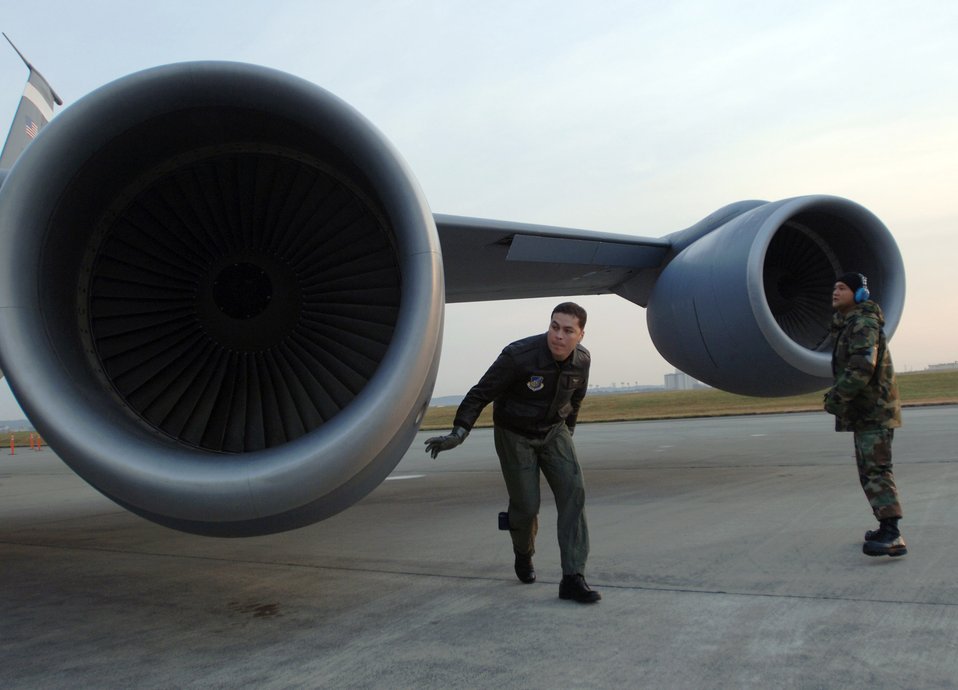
Keeping Stratotankers flying

YOKOTA AIR BASE, Japan (AFPN) -- KC-135 Stratotanker pilot Capt. Brian Burr (left), preflights his aircraft with crew chief Senior Airman James Taimanglo before an exercise Cope North 05 morning sortie. Cope North is a bilateral exercise to enhance U.S. and Japanese air operations. It gives pilots from both countries opportunities to conduct training in air combat tactics, electronic combat and airborne air control. Captain Burr is with the 909th Air Refueling Squadron, and Airman Taimanglo with the 718th Aircraft Maintenance Squadron here.